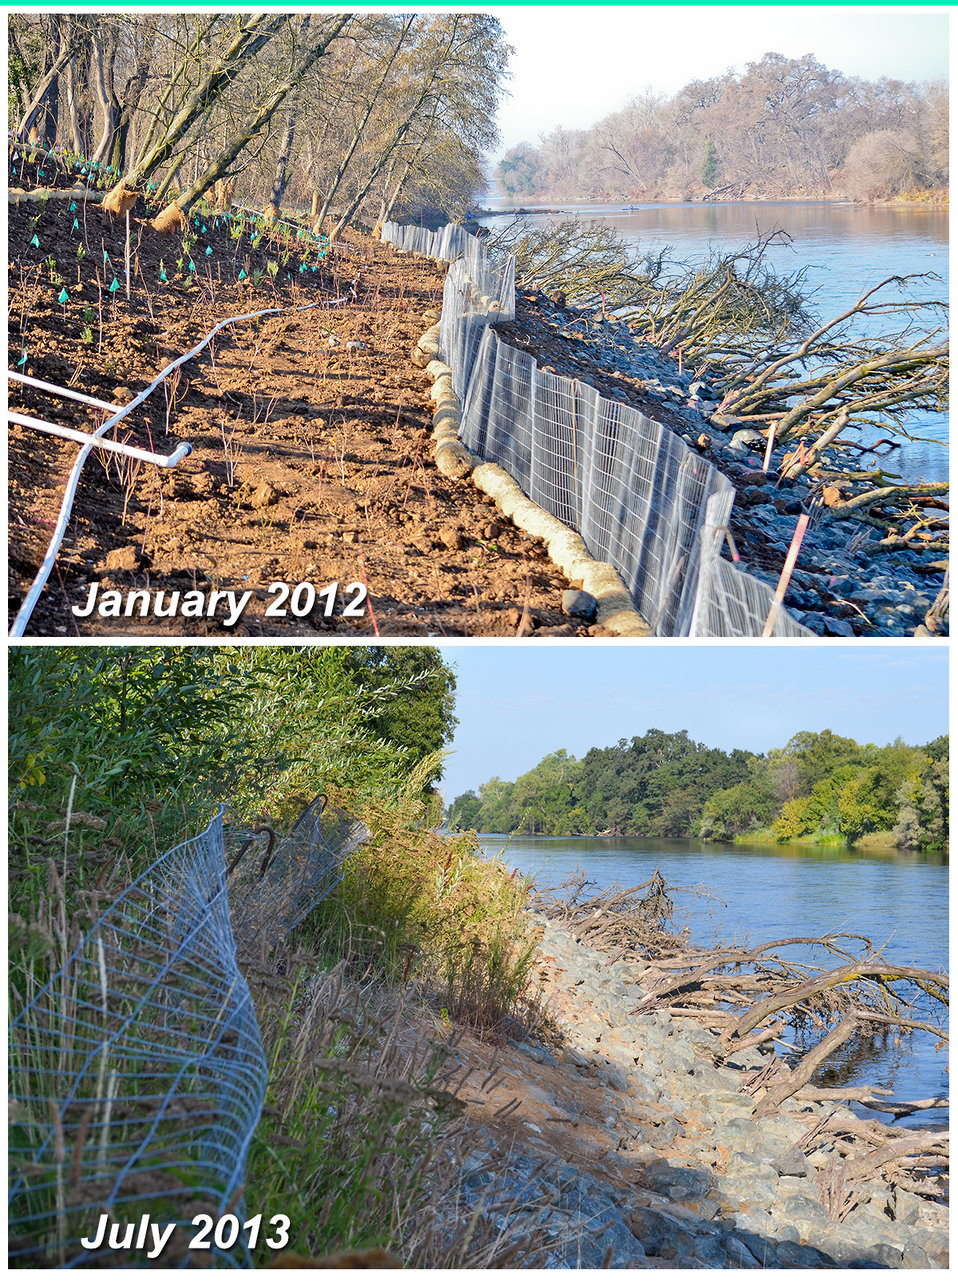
Eighteen months of growth along a lower American River bank

A photo illustration shows the growth of plantings along the lower American River in Sacramento, Calif. After repairing riverbank erosion in 2012, the U.S. Army Corps of Engineers Sacramento District planted native grasses and shrubs to return the site to its natural condition. The work is part of the Corps’ Sacramento River Bank Protection project, and is designed to reestablish riverbank habitat function for endangered fish like salmon and steelhead trout. (U.S. Army photo illustration by Todd Plain/Released)